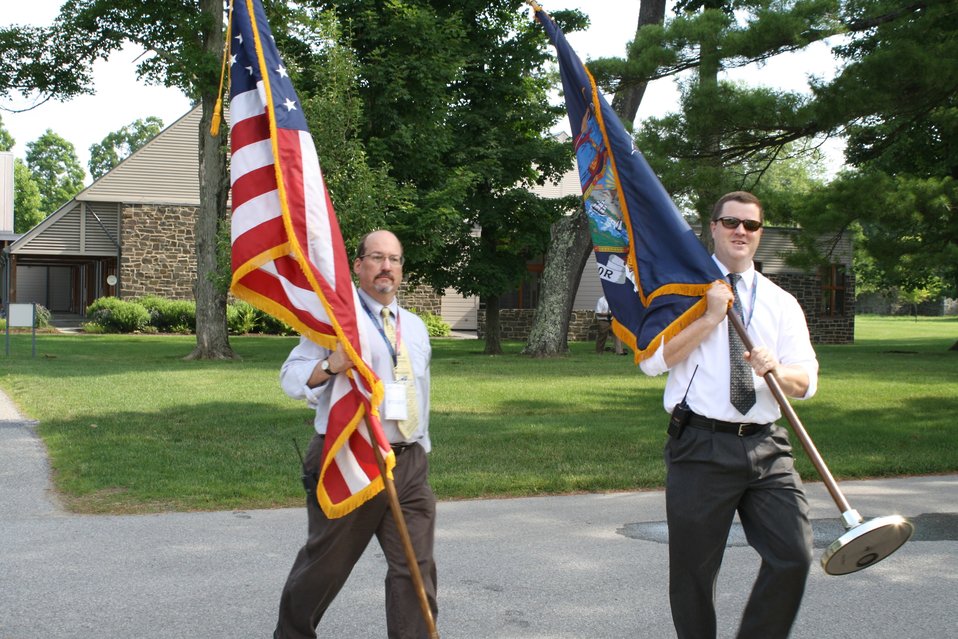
Jeff Urbin and Cliff Laube working on the set up for the Library rededication ceremony.; Location: Franklin D. Roosevelt Presidential Library, Hyde Park, New York